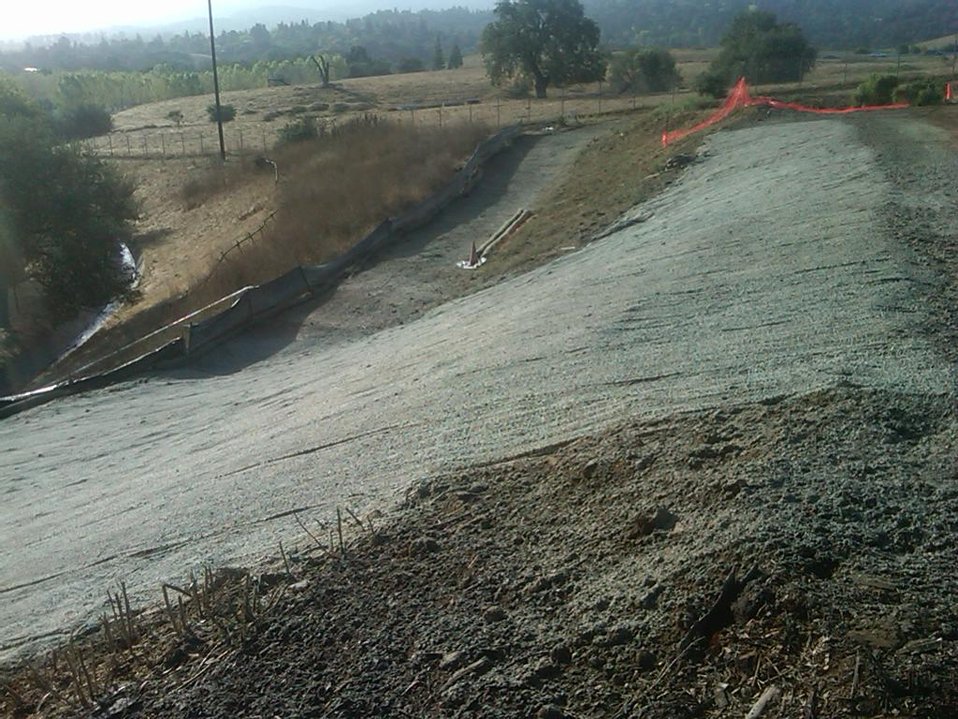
Recovery Act Supports Soil and Debris Cleanup, Groundwater Treatment at SLAC

Recovery Act workers are on track to remove more than 30,000 cubic yards of contaminated soil and debris at the SLAC National Accelerator Laboratory by September 2011.
The Recovery Act invested $14.3 million in legacy cleanup activities at SLAC. In addition to removing contaminated soil and debris that is shipped to local disposal facilities, Recovery Act workers installed three new groundwater treatment systems.